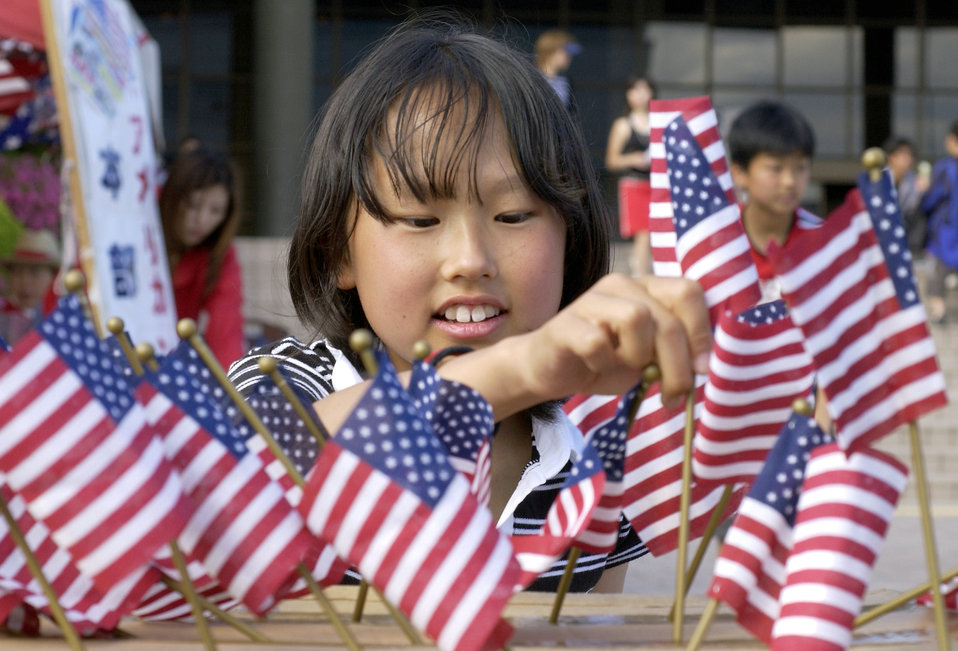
Long may they wave

A Japanese girl picks up an American flag during an American Day celebration June 13, 2004, outside Misawa Air Base, Japan. The event brings visitors who are interested in learning about American culture from all over northern Japan.